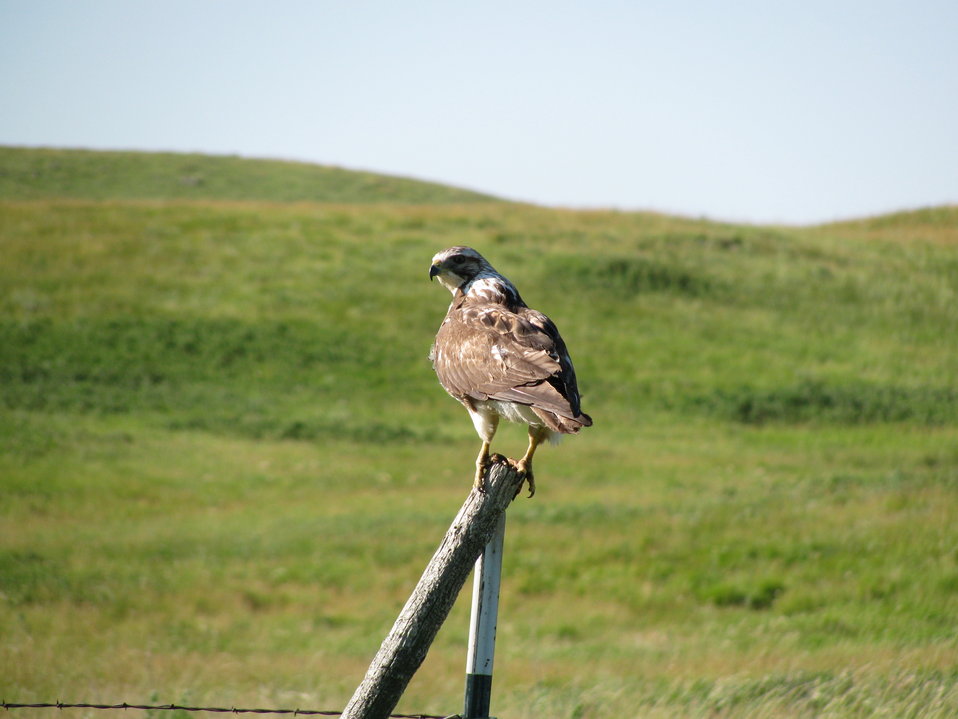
Immature Swainson's Hawk